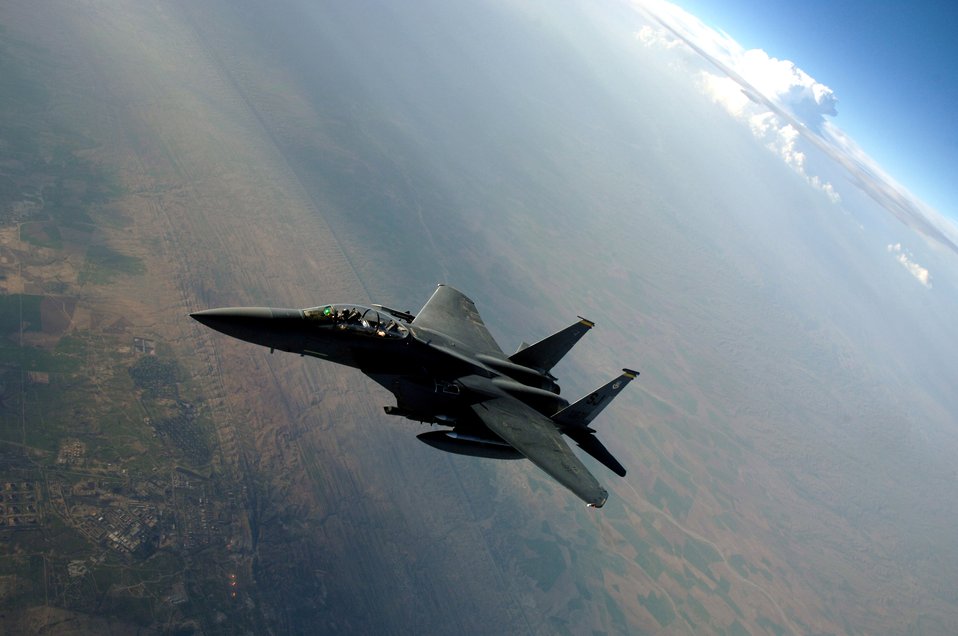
A view to a refuel

An F-15E Strike Eagle breaks away from a KC-135 Stratotanker after refueling over Southwest Asia on Tuesday, April 11, 2006. The F-15E is deployed to the 336th Expeditionary Fighter Squadron from Seymour Johnson Air Force Base, N.C. The KC-135 is deployed to the 340th Expeditionary Air Refueling Squadron from Fairchild Air Force Base, Wash.